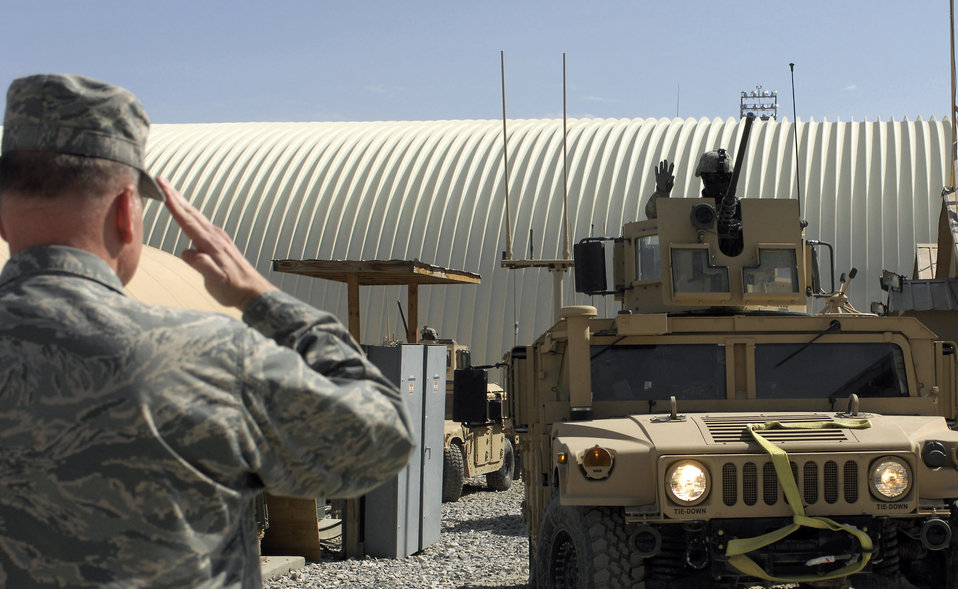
Top agents praise OSI efforts within Afghanistan

Brig. Gen. Dana Simmons salutes Airmen of the Office of Special Investigations team as they leave on a mission Feb. 25 at Bagram Airfield, Afghanistan. The general spoke with Airmen and Department of Defense civilians contributing to OSI missions in Afghanistan. General Simmons is the Air Force OSI commander.